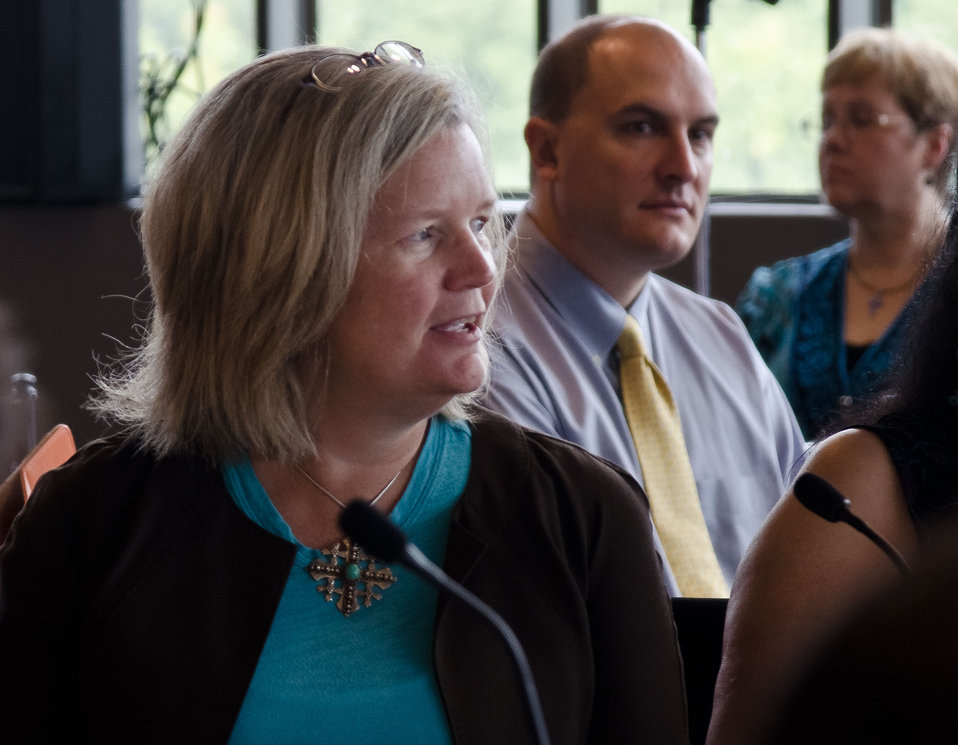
Suzanna Palmieri (black sweater and blue blouse), Chief of Staff to the Agriculture Deputy Secretary Kathleen Merrigan, speaks on behalf of the Deputy Secretary who was unable to attend, during the first business meeting of the U.S. Department of Agriculture's (USDA) Council for Native American Farming and Ranching (CNAFR), held on Tuesday, Aug. 14, 2012 at the National Museum of the American Indian, in Washington, D.C. CNAFR was created to advise the Secretary on ways to eliminate barriers to participation for Native American Farmers and Ranchers in USDA programs. The Council was established as part of the Keepseagle settlement, and is conducted under the oversight of USDA's Office of Tribal Relations, which is part of the Office of the Secretary of Agriculture. The Director of Tribal Relations Joanna Mounce Stancil serves as Designated Federal Official (DFO) for the Council.